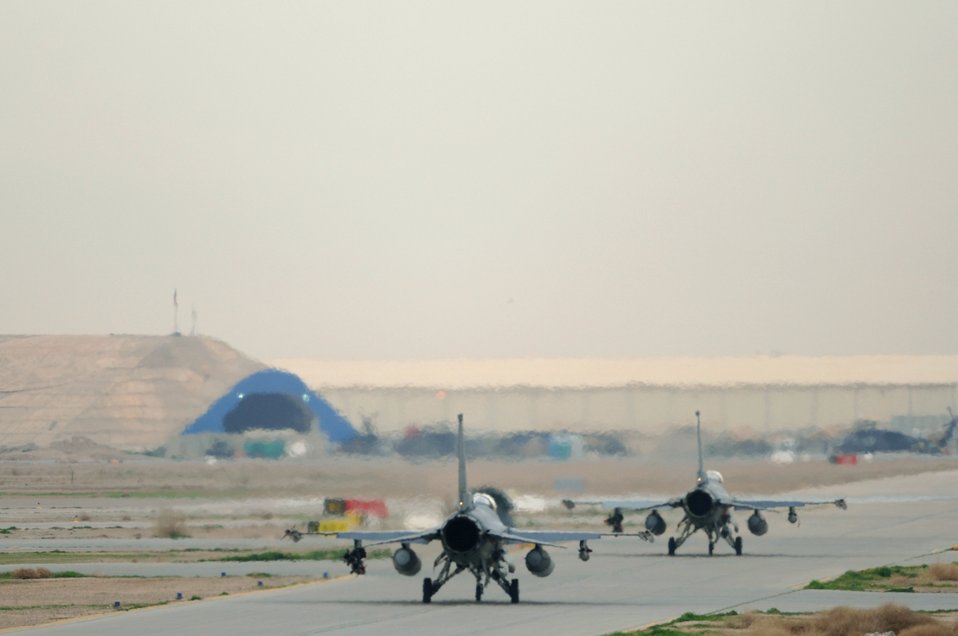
Falcons ready to leave the nest

Two F-16 Fighting Falcons from the 510th Expeditionary Fighter Squadron taxi toward the runway for a mission Feb. 13 from Balad Air Base, Iraq. The 510th FS is deployed from Aviano Air Base, Italy. These missions involve flying close-air support to support coalition troops, infrastructure protection, reconstruction activities and operations to deter and disrupt terrorist activities.